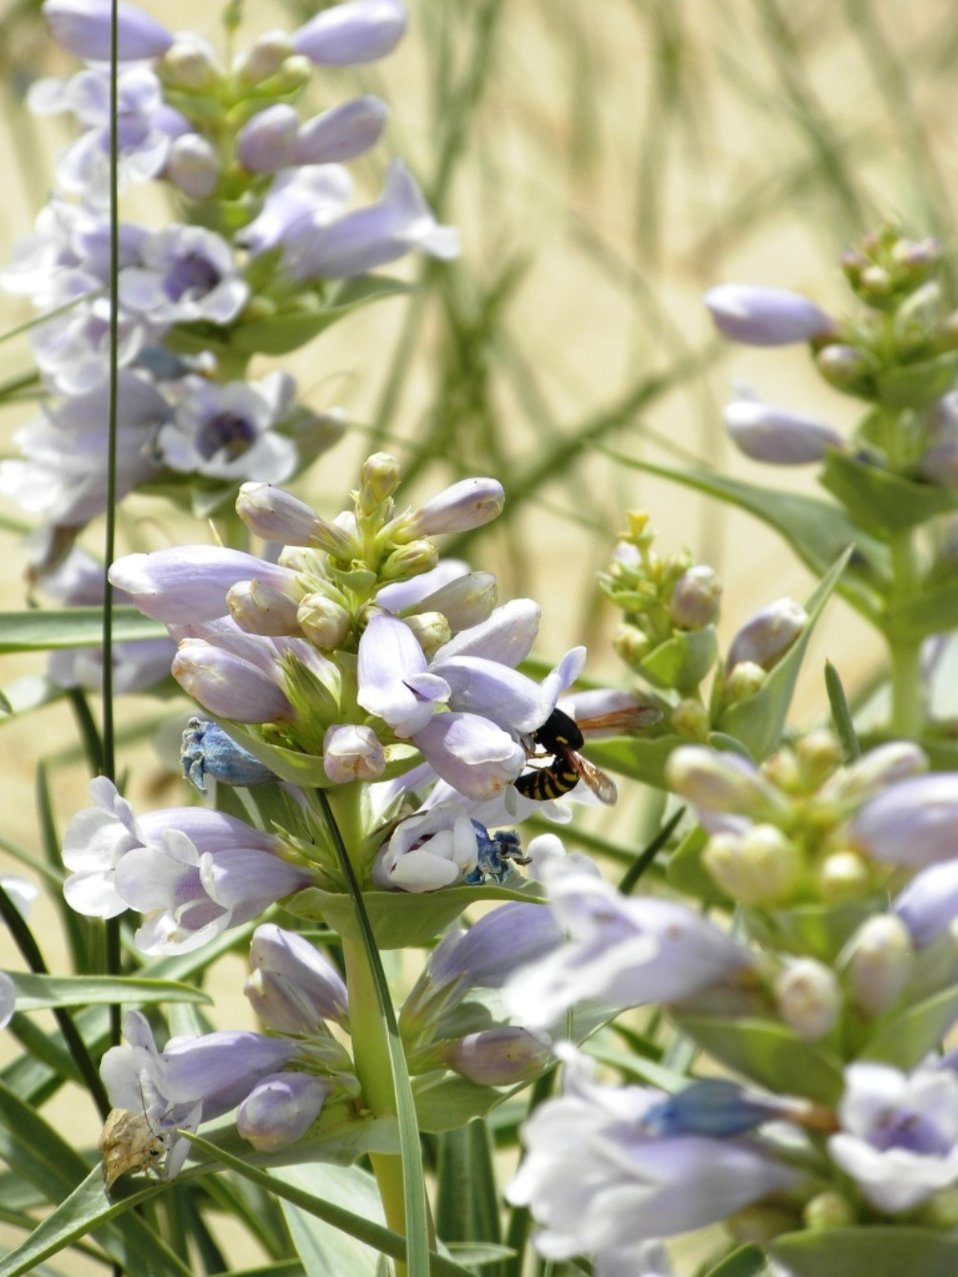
Pollinators Blowout Penstemon

This photo was captured during Blowout Penstemon surveys conducted with BLM and WY Natural Diversity Database in June 2011.

Location: Bradley Peak, Carbon County, WY

Credit: Mark Bellis / USFWS

Photo Contest Entry #64